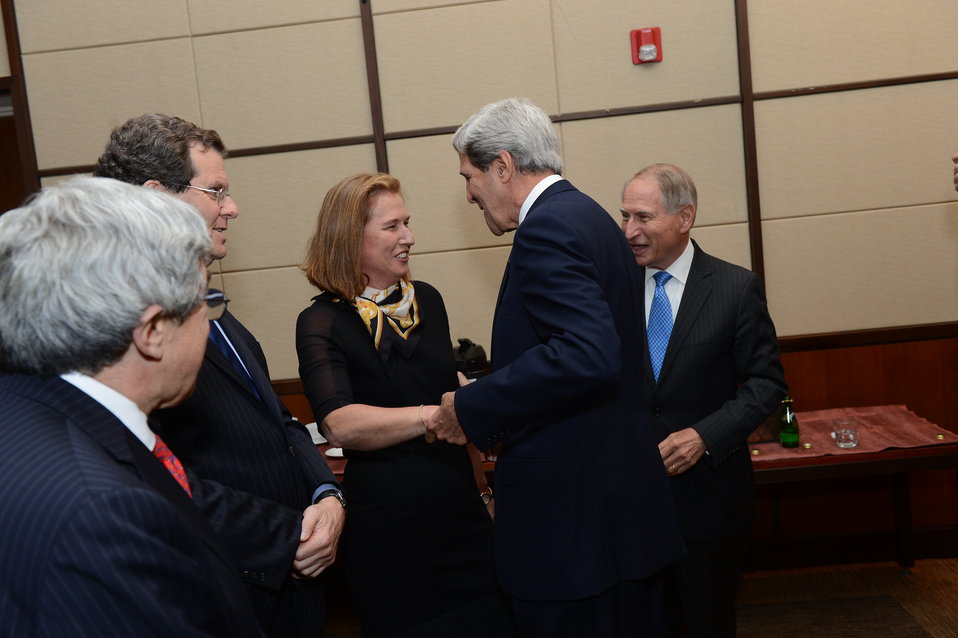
Secretary Kerry Speaks With Israeli Justice Minister Livni

U.S. Secretary of State John Kerry speaks with Israeli Justice Minister Tzipi Livni and American Jewish Community officials at the Jewish Community Global Forum in Washington, D.C., on June 3, 2013.